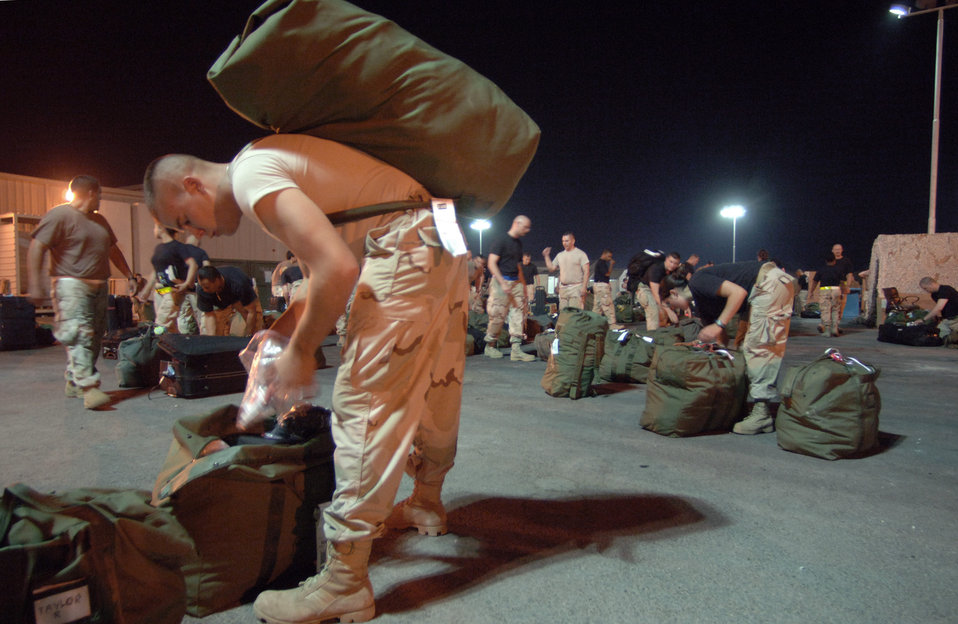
Work begins when boots hit the ground

Shortly after his arrival in Southwest Asia Sept. 17, Airman 1st Class Jeffery Madden removes items he'll need for a 36-hour layover before taking his personal baggage through a customs inspection. Airman Madden is a civil engineer assistant from Fairchild Air Force Base, Wash.